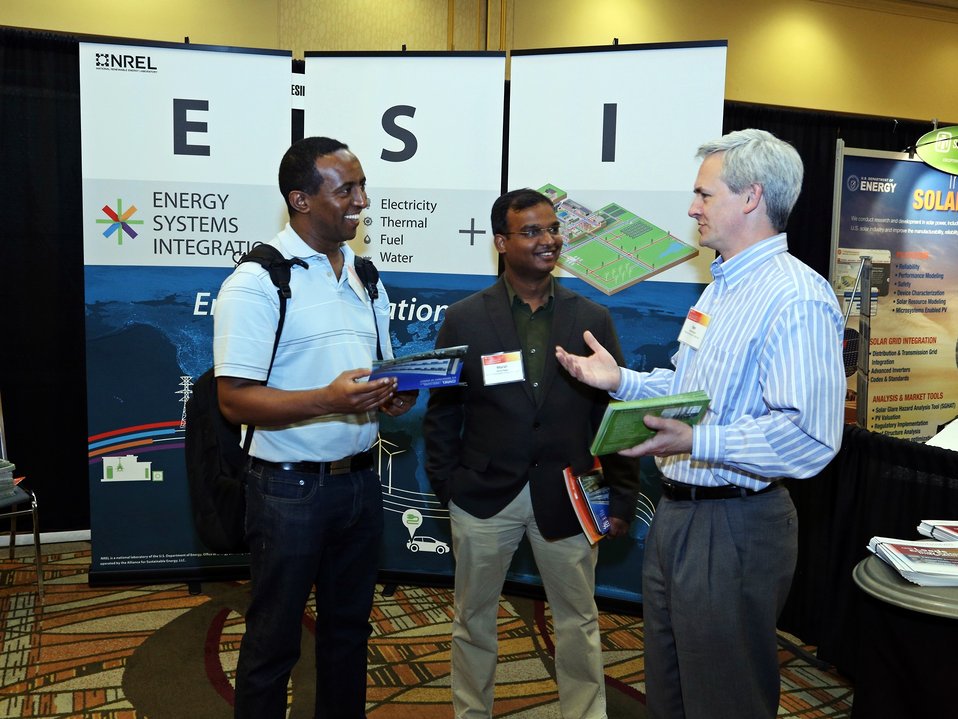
Tech Forum 11

Attendees discussing in front of Energy Systems Integration's booth.